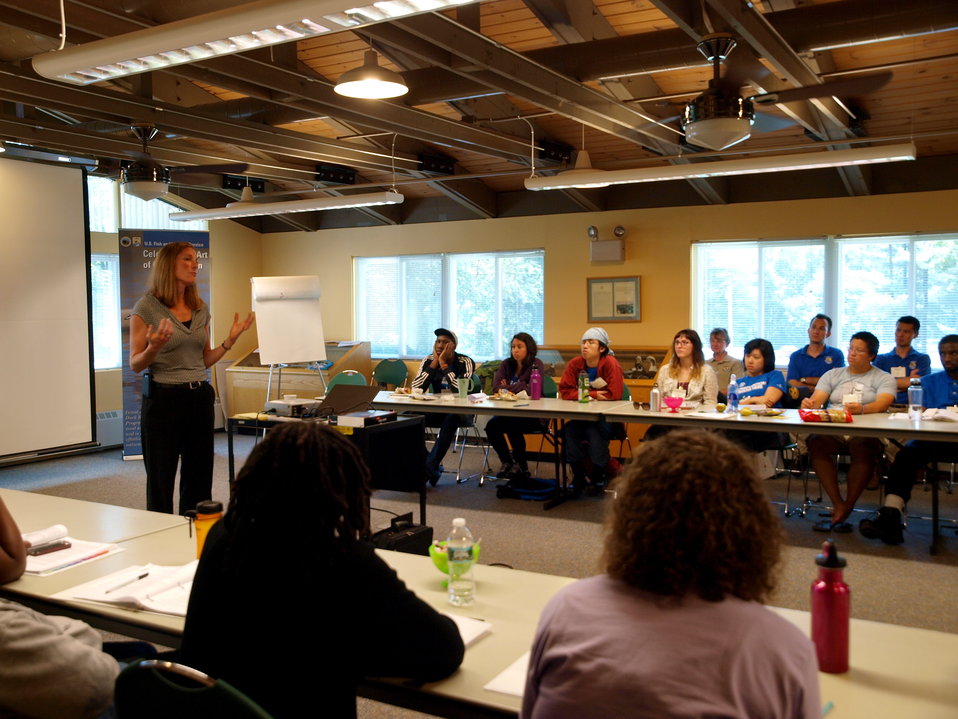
Wendi Weber Gives Wisdom

Northeast Regional Director gives words of wisdom to CDIP interns.